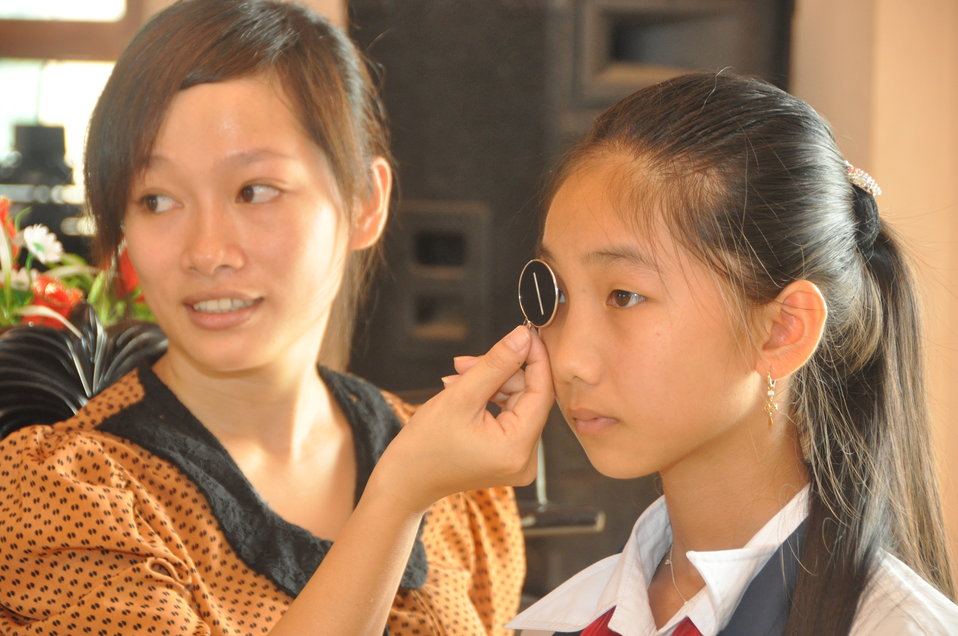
School children in Dak To, Kon Tum Province, receive eyeglasses under a program supported by USAID and partners HKI and World Learning